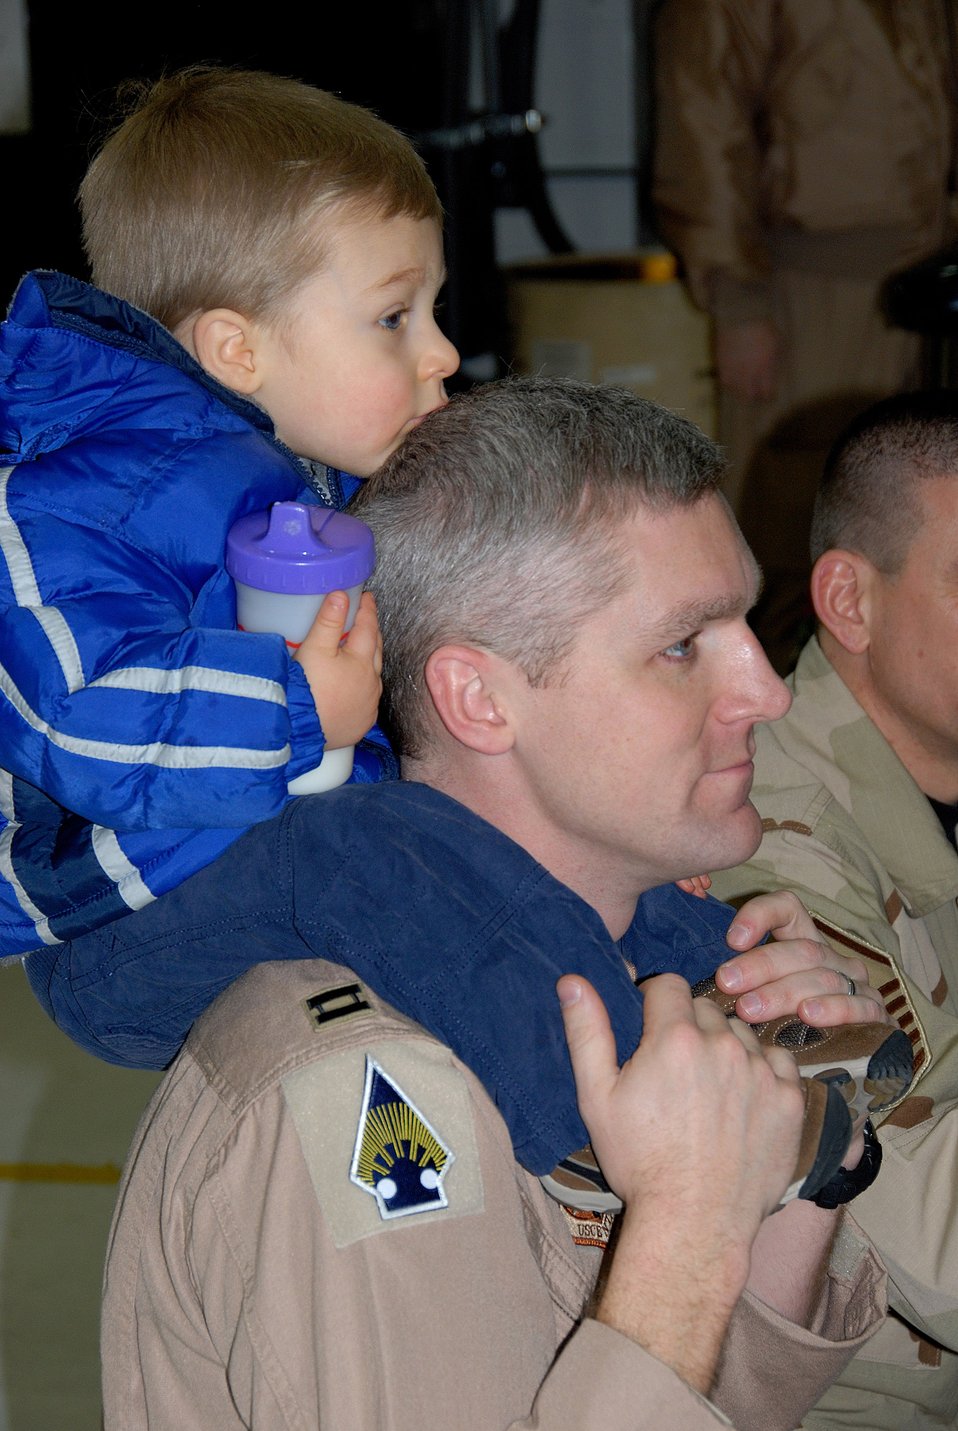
Saying goodbye

Minnesota Air National Guardsman Capt. Matt Wiesner balances his 18-month-old son, Brant, during breakfast Jan. 5 in a maintenance bay at the 133rd Airlift Wing in St. Paul, Minn., before departing to Afghanistan in support of Operation Enduring Freedom.